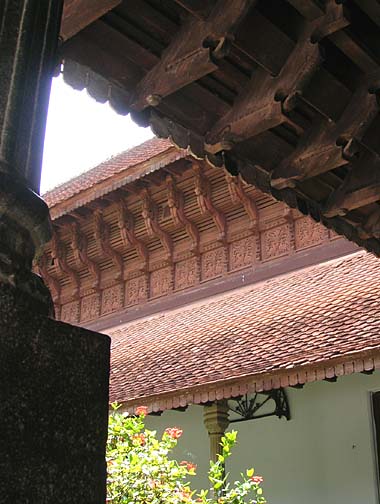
A view of the 'horses' at Kuthira Malika.